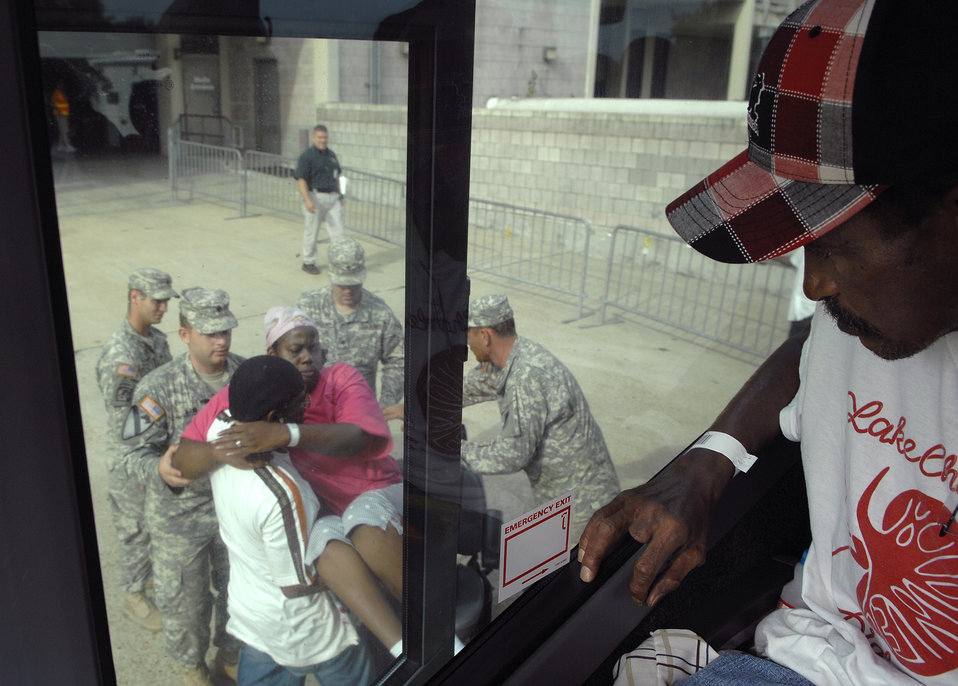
Carried to safety

Louisiana Army National Guard soldiers help to lift Lashaira El-Amin of Lake Charles, La., from her wheelchair and into a bus reserved for special needs evacuees of Hurricane Ike Sept. 12 at the Lake Charles Civic Center.